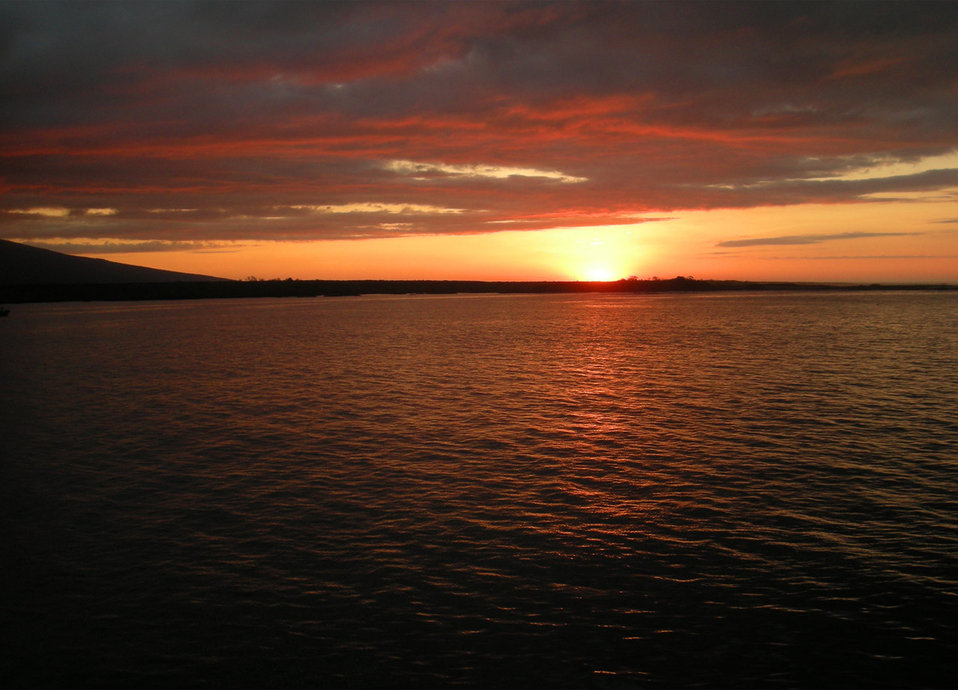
Galapagos sunset

Sunset on galapagos island, april 2011.